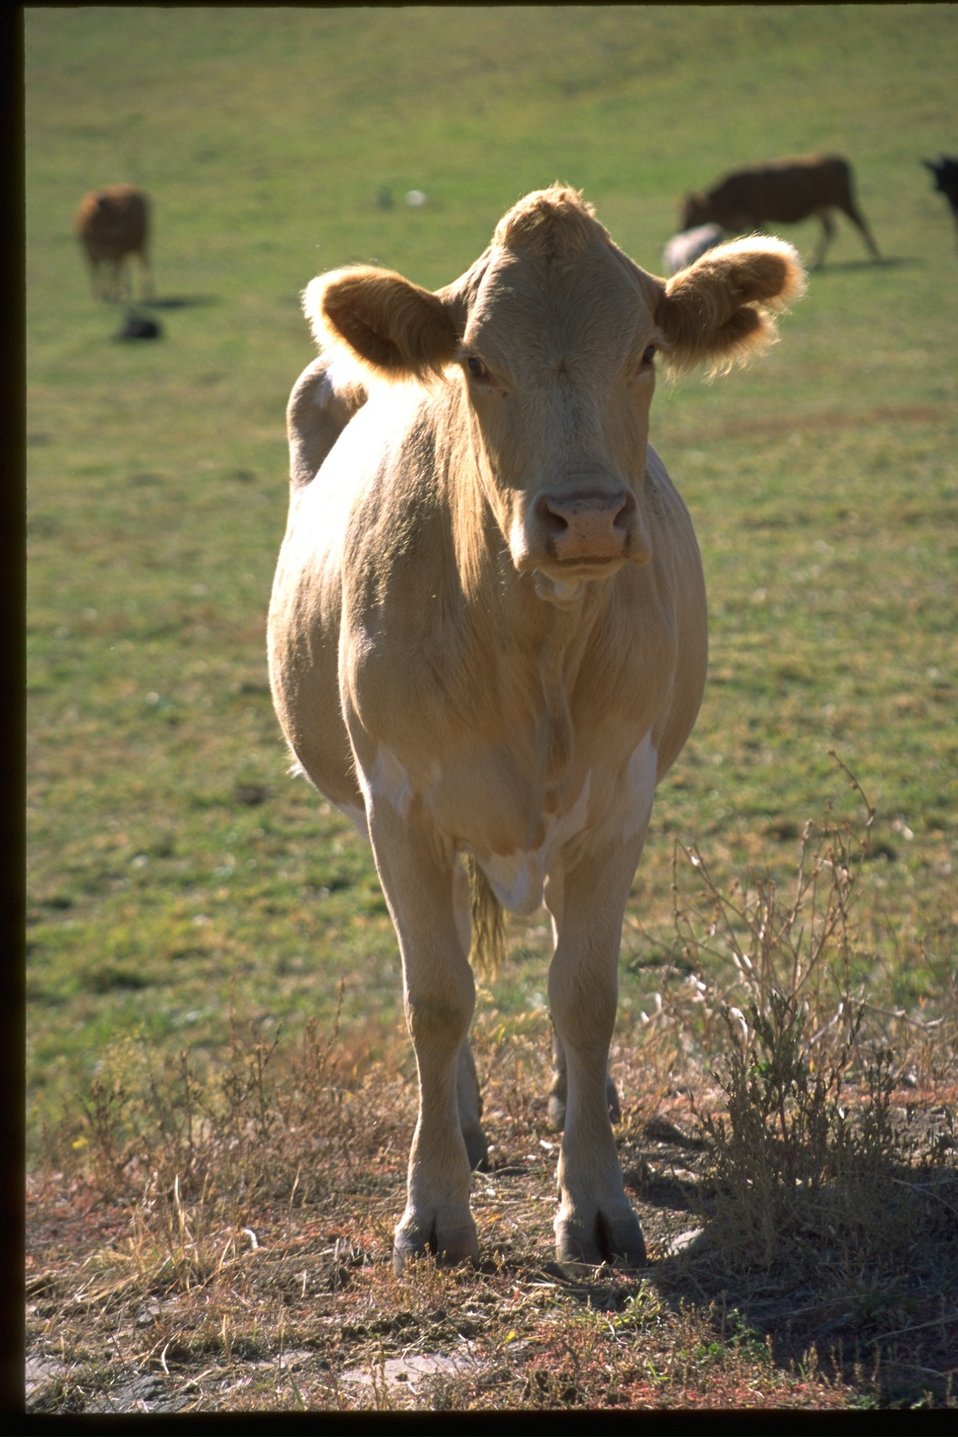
Cow in private pasture near section 2 of the John Day River.